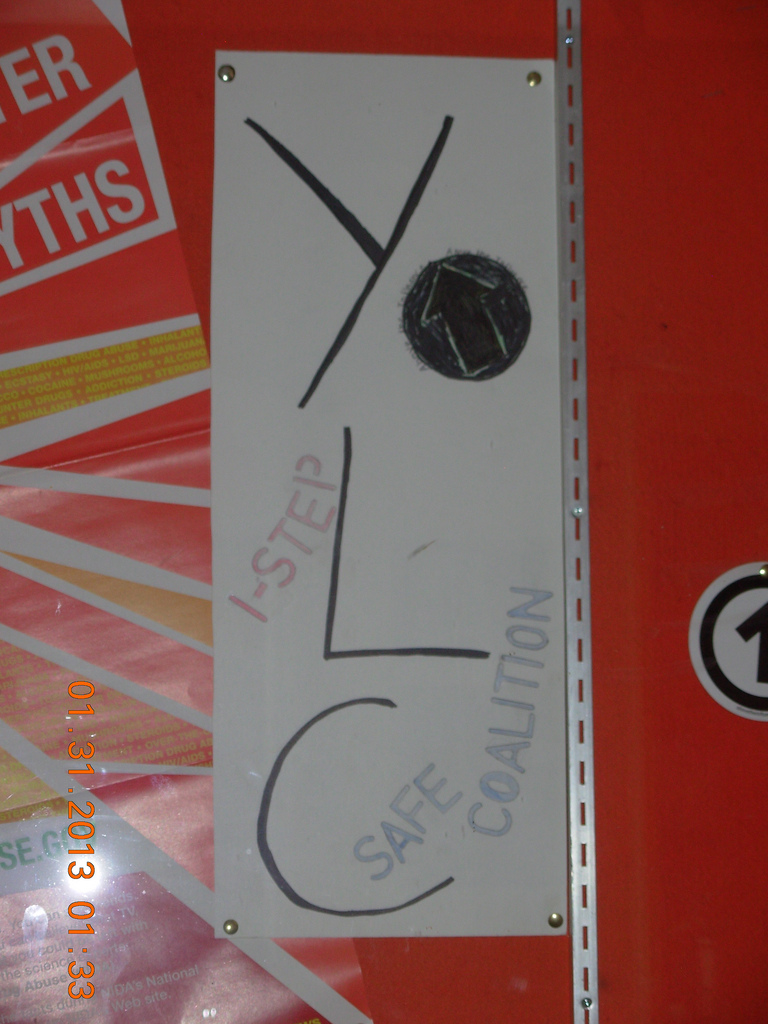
Iowa's SAFE Coalition, NDFW 2013

Van Buren County, IA. SAFE Coalition high school student run groups fighting issues of drug, alcohol, and tobacco abuse during NDFW 2013.